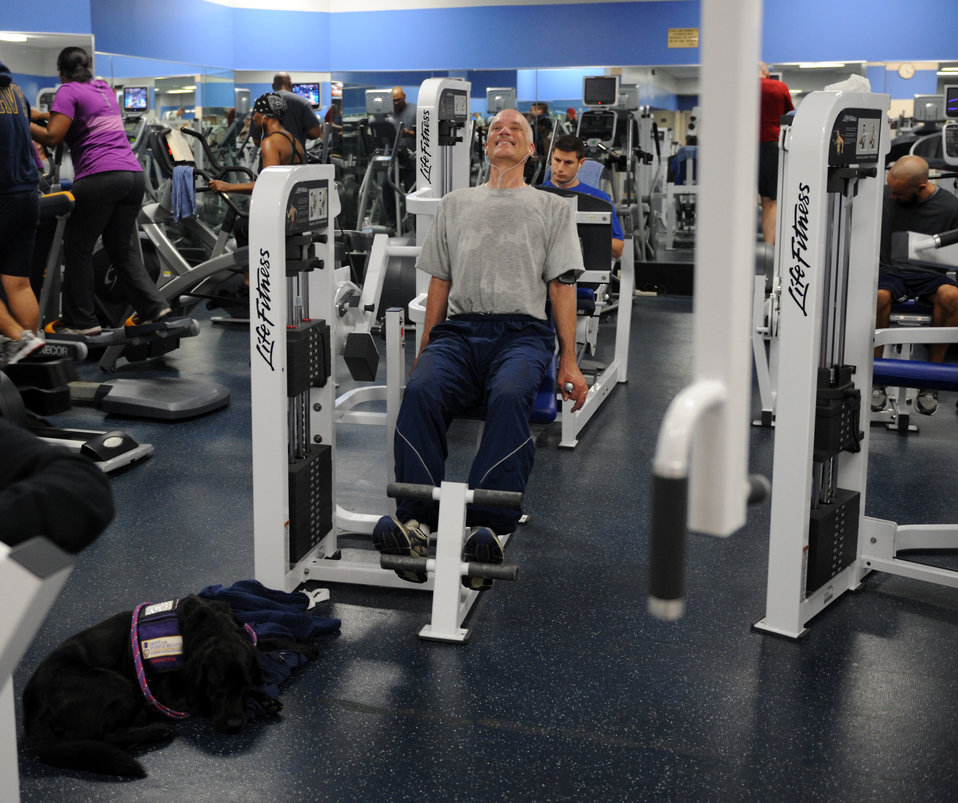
Chief discusses PTSD issues

Chief Master Sgt. Richard Simonsen engages in physical activity at the Joint Base Anacostia-Bolling fitness center while his service dog, Yoko, lies next to him. Simonsen lives with Post Traumatic Stress Disorder (PTSD), a condition he endured on a deployment to Afghanistan last year and Yoko helps him with his daily activities.